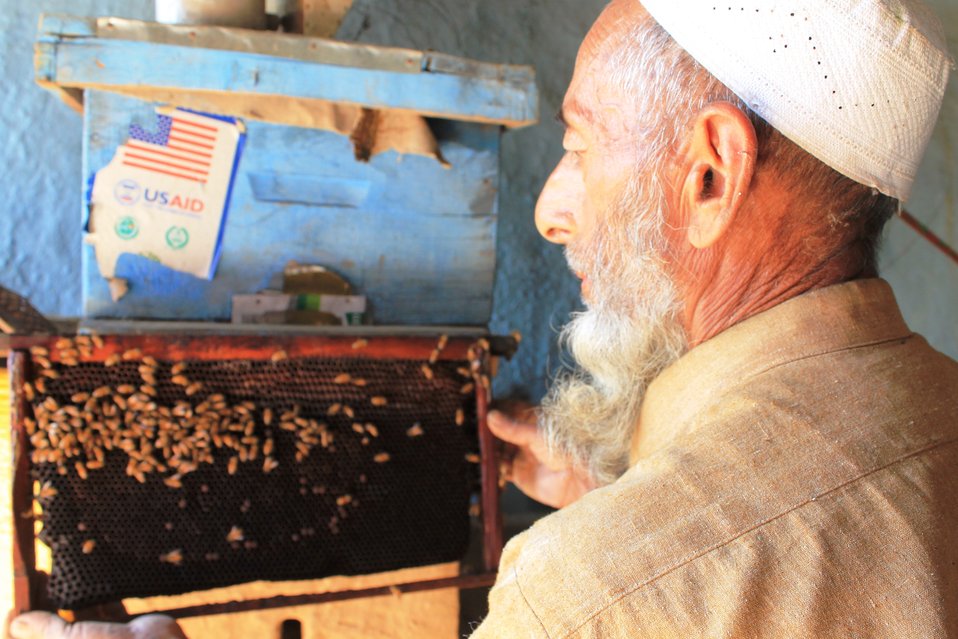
Honey Value Chain Development Initiative under the USAID's Entrepreneurs Project

Swat, October 17, 2012: With proper training on bee hive management and marketing techniques from USAID, Fazal Wahid, 66, has multiplied his bee colonies and his total production has reached 30 kgs from 15 kgs, contributing Rs. 12,000 to his net family income.